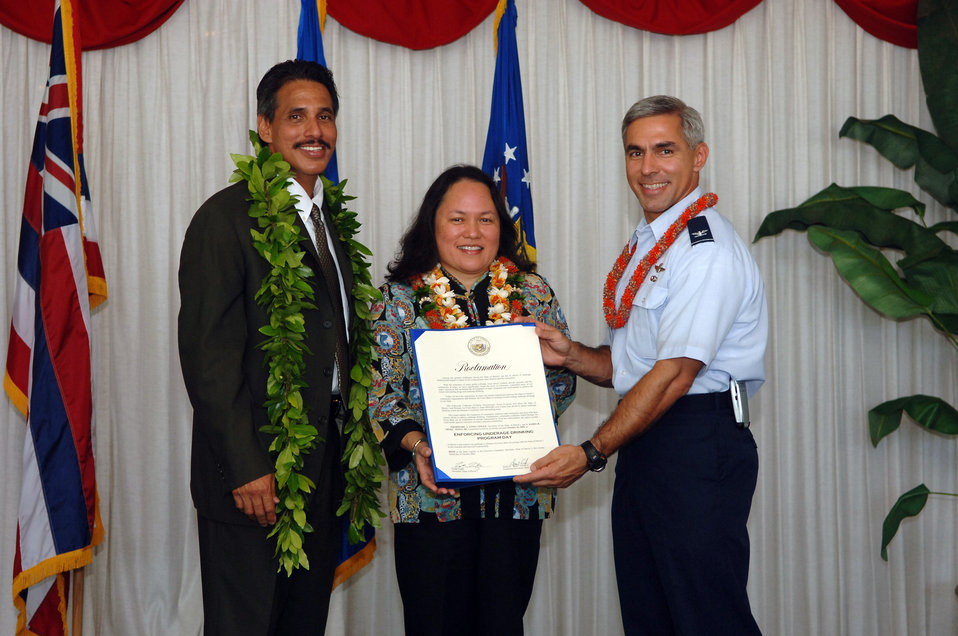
Hickam AFB, community combat underage drinking

Hawaii Lt. Gov. James Aiona Jr., Dr. Chiyome L. Fukino and Col. John Torres display the proclamation Oct. 26 announcing